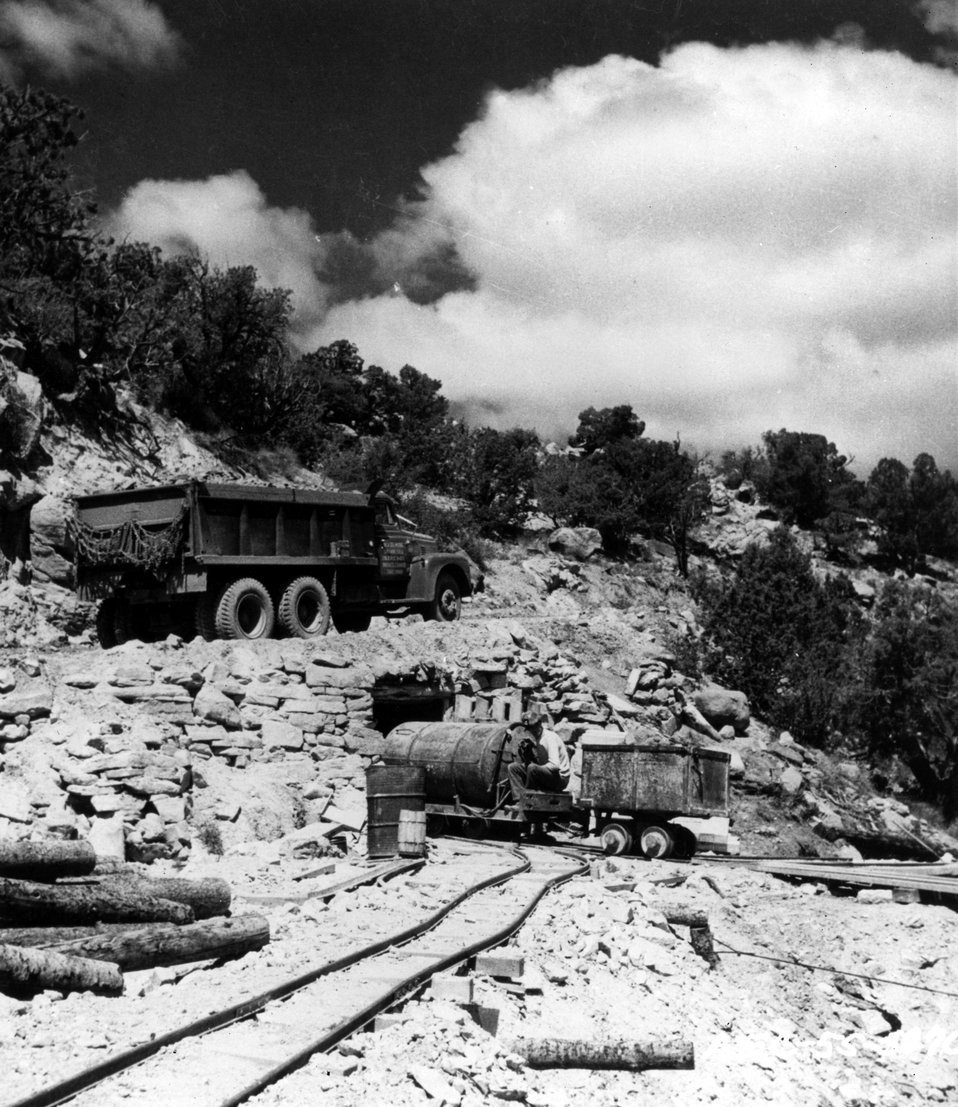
Truck loaded with uranium ore is on way to processing mill while mine car enters mine to pick up more ore. c. 1955